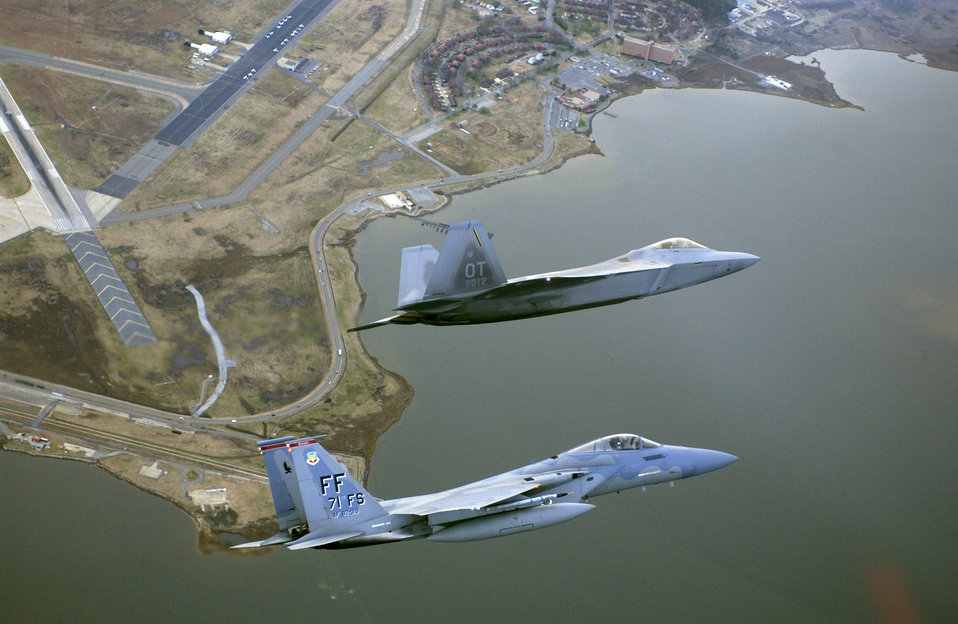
Celebrating 100 years of flight

KILL DEVIL HILLS, N.C. -- Lt. Col. Dave Rose flew the Air Force's new F/A-22 Raptor during a First Flight Centennial Celebration fly-by at the Wright Brothers National Memorial here Dec. 16. Maj. Robert Garland flew an F-15 Eagle from Langley Air Force Base, Va., and joined in formation after Rose's fly-by. Langley is slotted to be the home of the first operational squadron of F/A-22s by the end of 2004. Rose is from the 422nd Test and Evaluation Squadron at Nellis AFB, Nev.